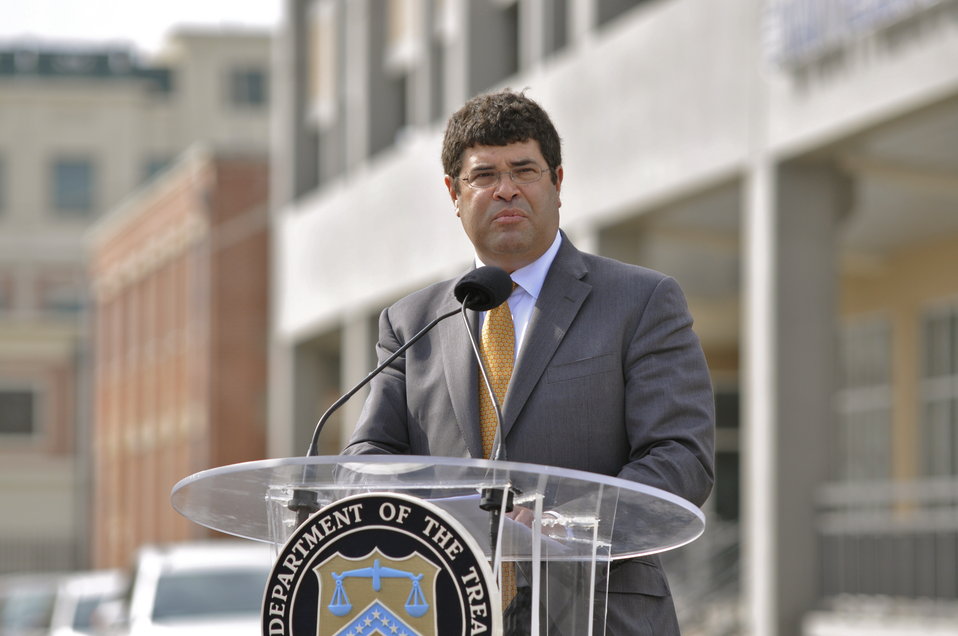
Deputy Secretary Wolin's Trip to New Orleans

On Thursday, Deputy Treasury Secretary Neal Wolin announced in New Orleans a new round of New Markets Tax Credit awards to spur economic growth in low-income and distressed communities across the country. This funding announcement comes on the heels of President Obama’s budget release, in which he announced additional plans to extend and expand the New Markets Tax Credit program to continue rebuilding the economy and create jobs.